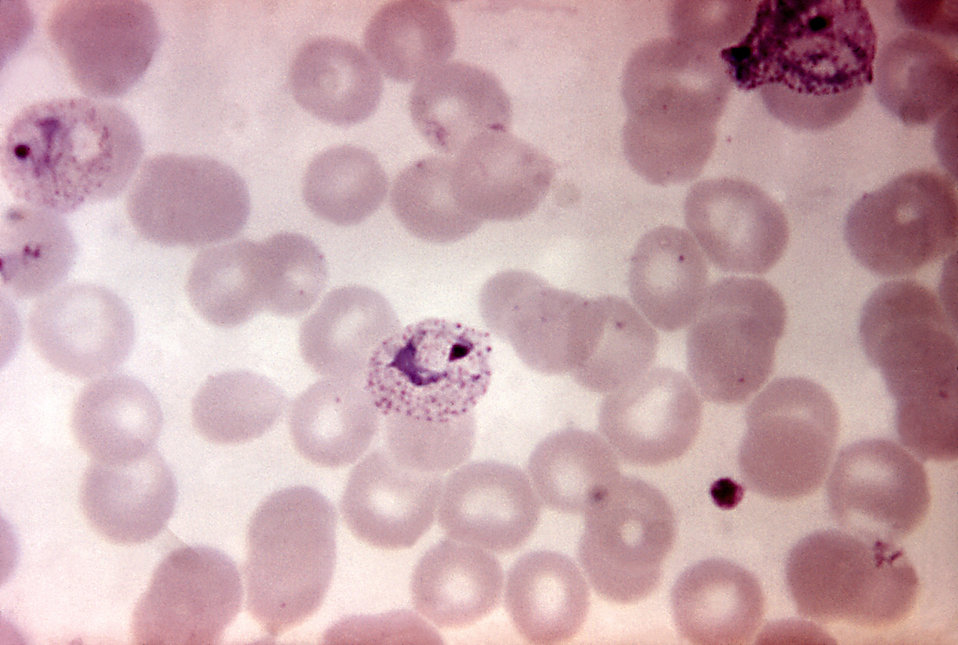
This micrograph depicts a growing Plasmodium vivax trophozoite; Mag. 1250X.